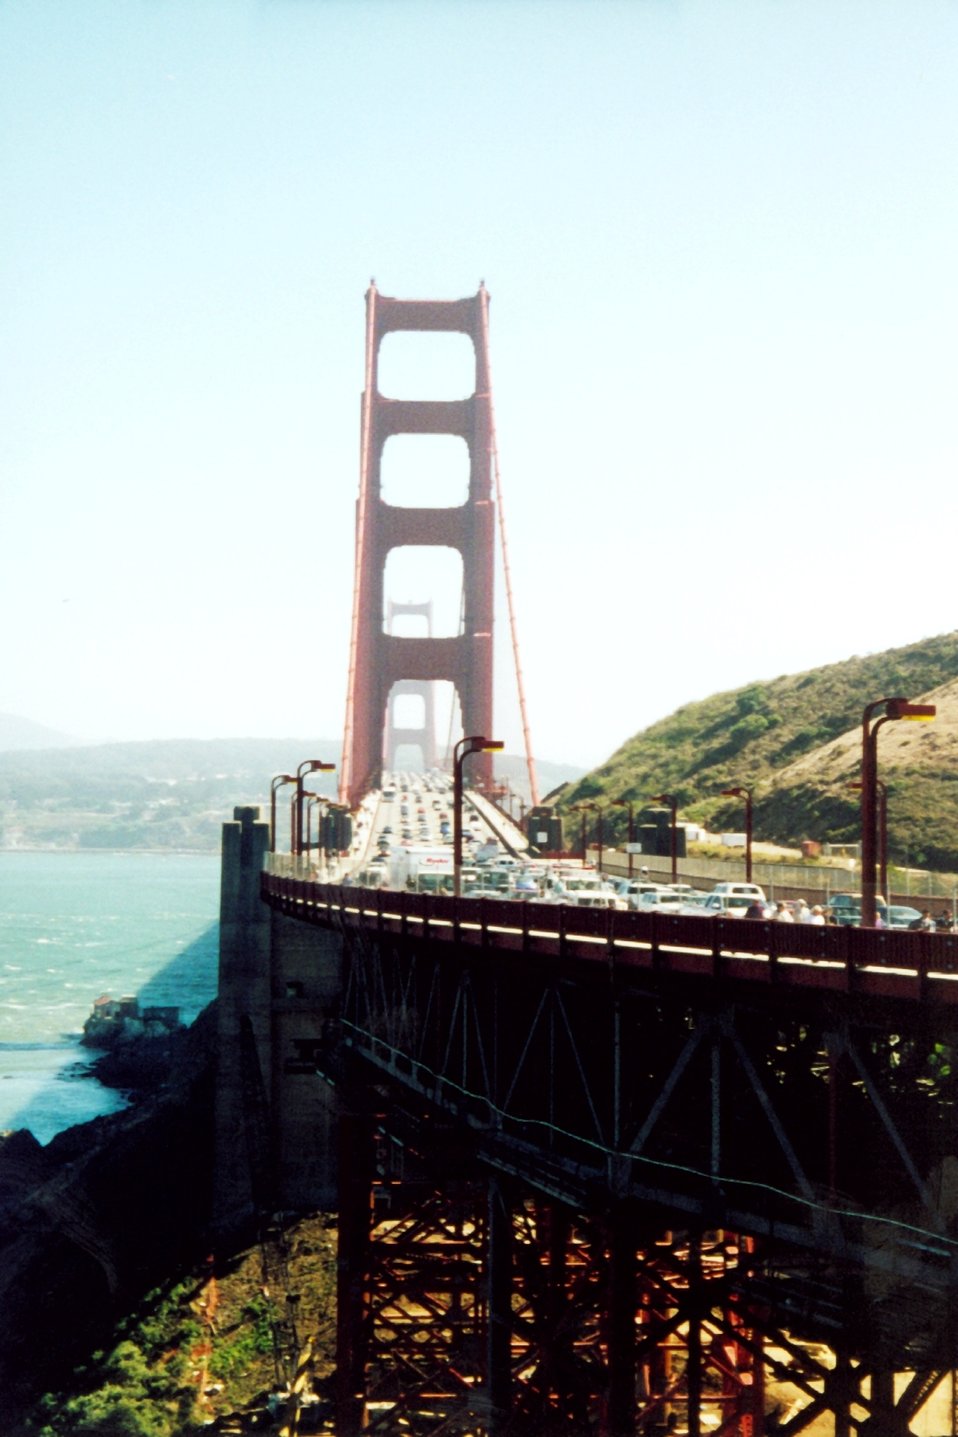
The north side of the Golden Gate Bridge looking to the south.